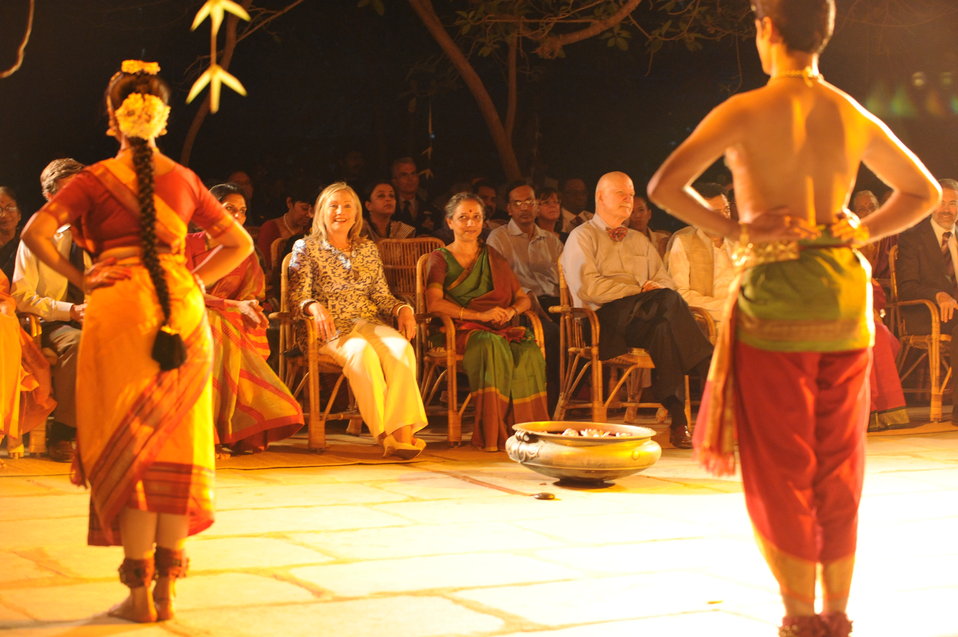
Secretary Clinton, Leela Samson, and Ambassador Burleigh Enjoy the Bharat Natyam Performance

U.S. Secretary of State Hillary Rodham Clinton; Leela Samson, Managing Director of the Kalakshetra Foundation; and Ambassador Peter Burleigh, Chargé d'Affaires of U.S. Embassy in New Delhi, India; enjoy the Bharat Natyam performance at Kalakshetra in Chennai, India, on July 20, 2011. [Paul Cohn/ State Department photo]